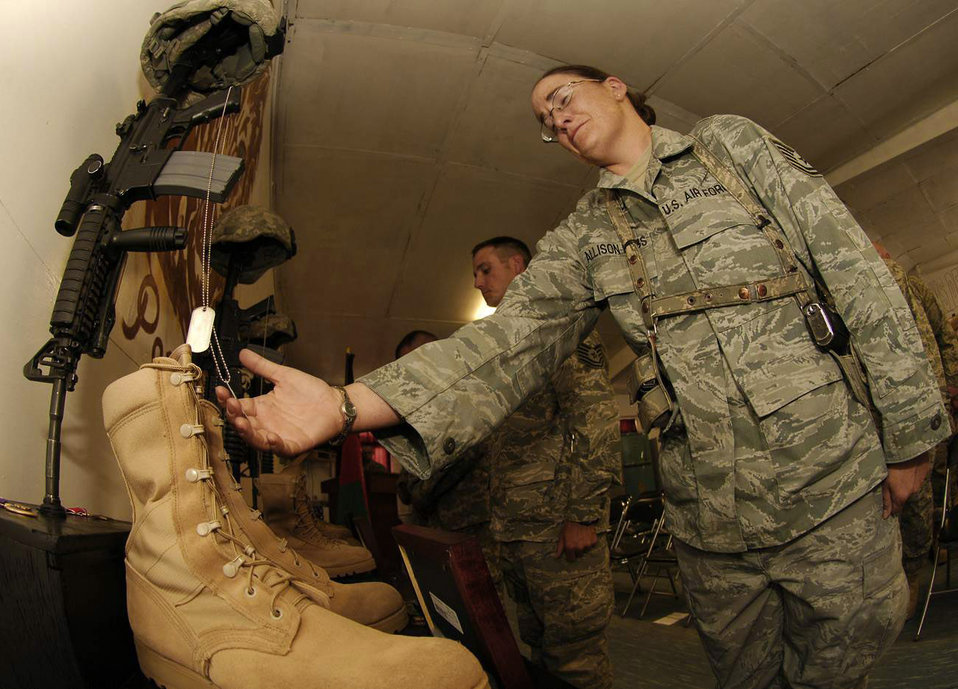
Solemn farewell

Tech. Sgt. Dawn Allison-Hess grieves for four of her fellow co-workers during a May 31 memorial at Forward Operating Base Lion, Afghanistan. Lt. Col. Mark Stratton, the provincial reconstruction team's commander, Army Master Sgt. Blue Rowe, a civil affairs NCO, Senior Airman Ashton Goodman, the vehicle operator, and Abdul Samad, the unit's legal adviser, were killed when their convoy vehicle was struck by a suicide car bomber May 26.